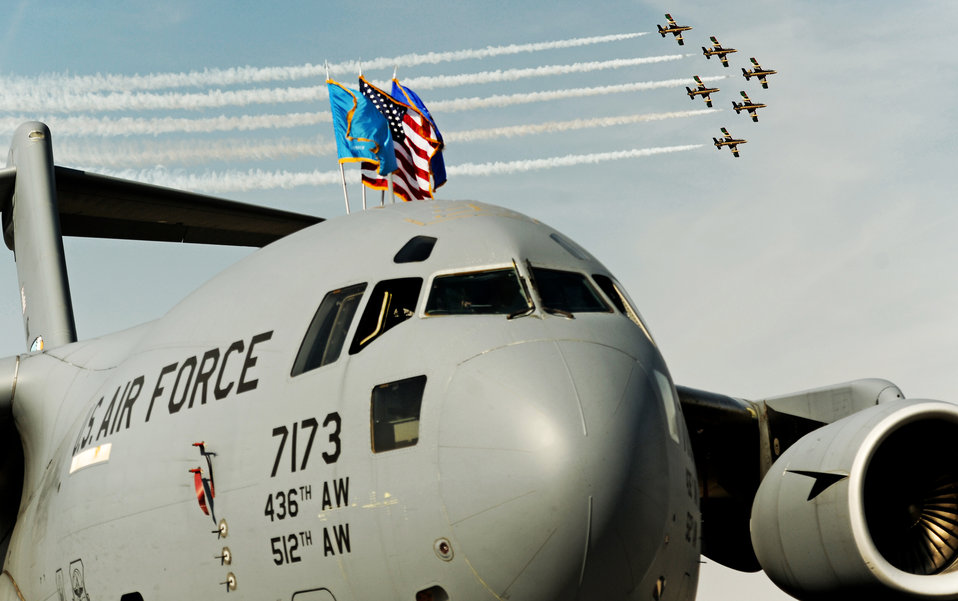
The sky over Dubai

An aerial demonstration team flies over a C-17 Globemaster at the 2011 Dubai Airshow Nov. 13, 2011, in Dubai, United Arab Emirates. The event demonstrates a shared commitment both to regional security and to developing key relationships throughout Southwest Asia.